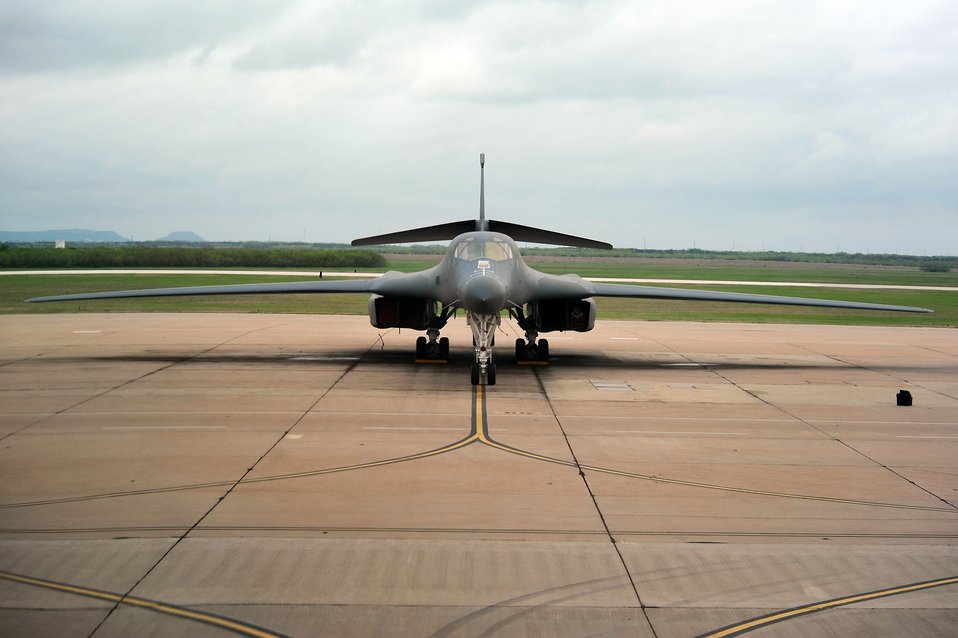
B-1B adapts, remains effective for 25 years

A B-1B Lancer sits on the flightline at Dyess Air Force Base, Texas. The bomber has adapted to a new mission during the last 25 years.